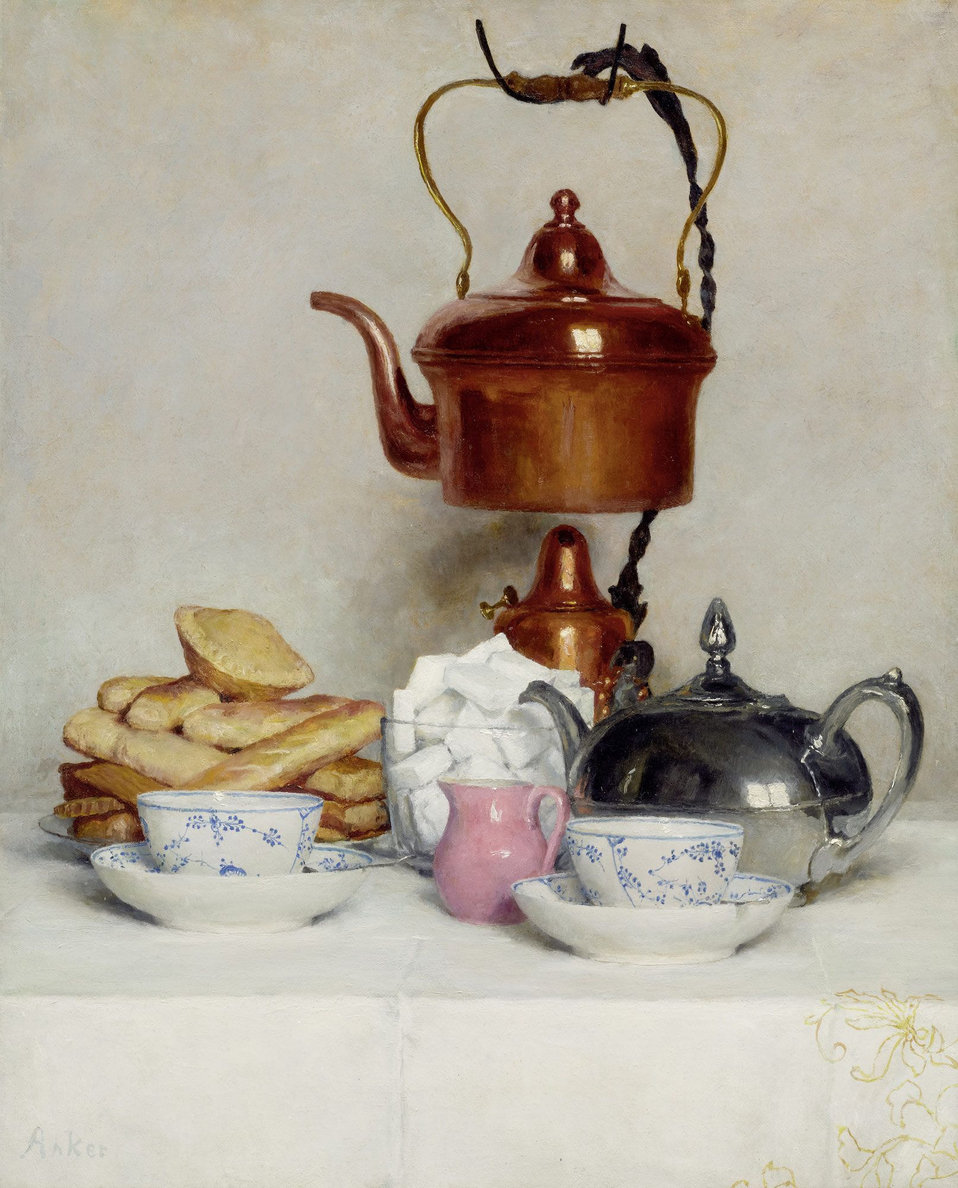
Albert Anker Stillleben Teeservice